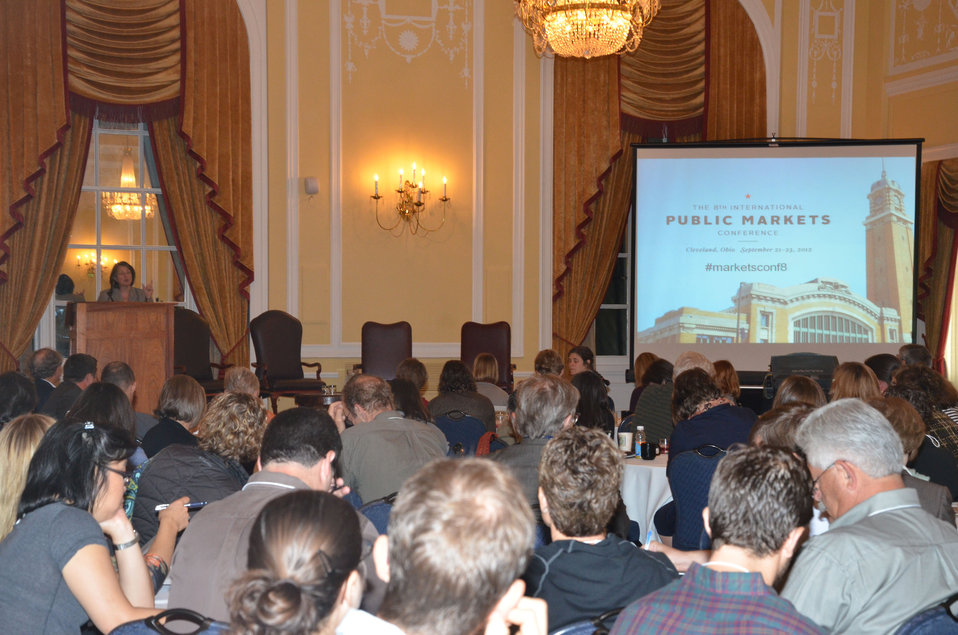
U.S. Agriculture Deputy Secretary Kathleen Merrigan gives the welcome address to more than 200 attendees at the 8th International Public Markets Conference held in Cleveland, Ohio on Sept. 21, 2012.